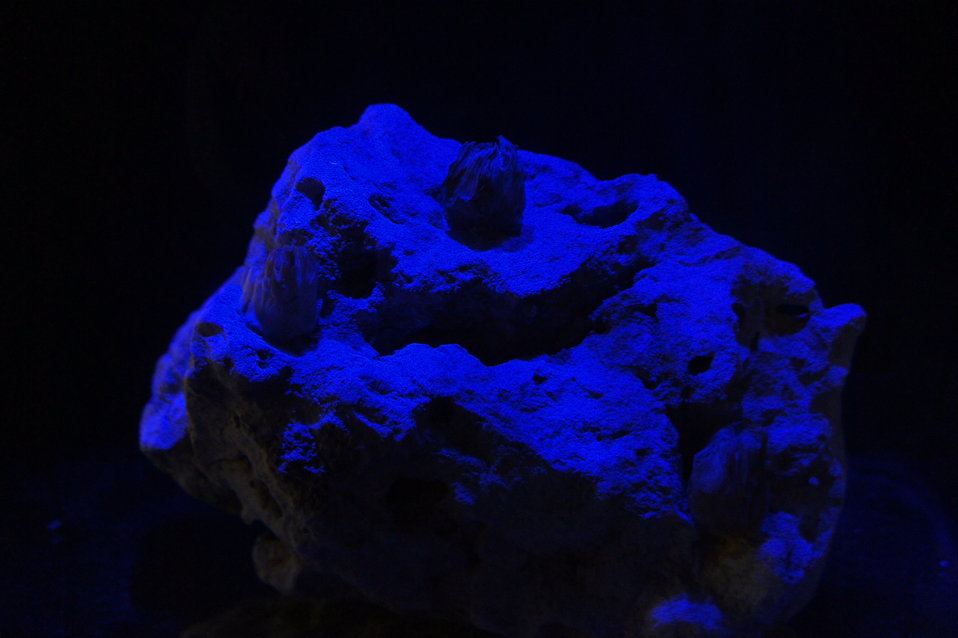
Nautilus eggs at the Smithsonian National Zoo

This nautilus egg has to be kept in a controlled environment and may take up to 14 months to hatch!